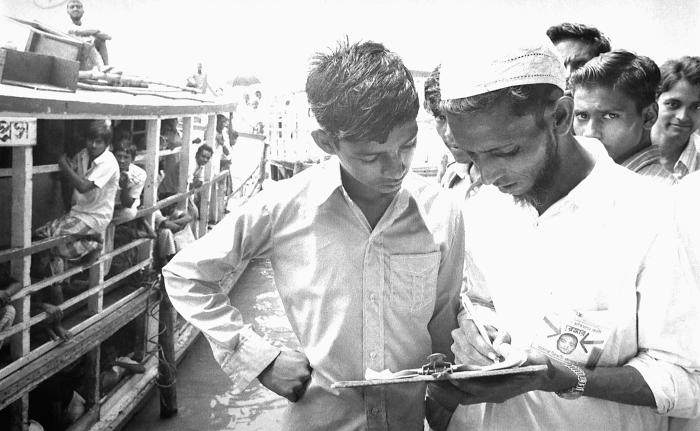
This 1975 image depicted a community volunteer smallpox eradication team member collecting data regarding possible smallpox cases in the local village while stationed at the town ghat from which a number of daily travelers were about to embark. The stairway leading down to the embarkation river landing is known as a ghat, and is a gathering place prior to travel, or awaiting river travelers to disembark. River travel is integral to the Bangladesh riverine culture, therefore, being stationed at the ghat was an excellent strategy for one in search of information from both local residents, and transient citizens.